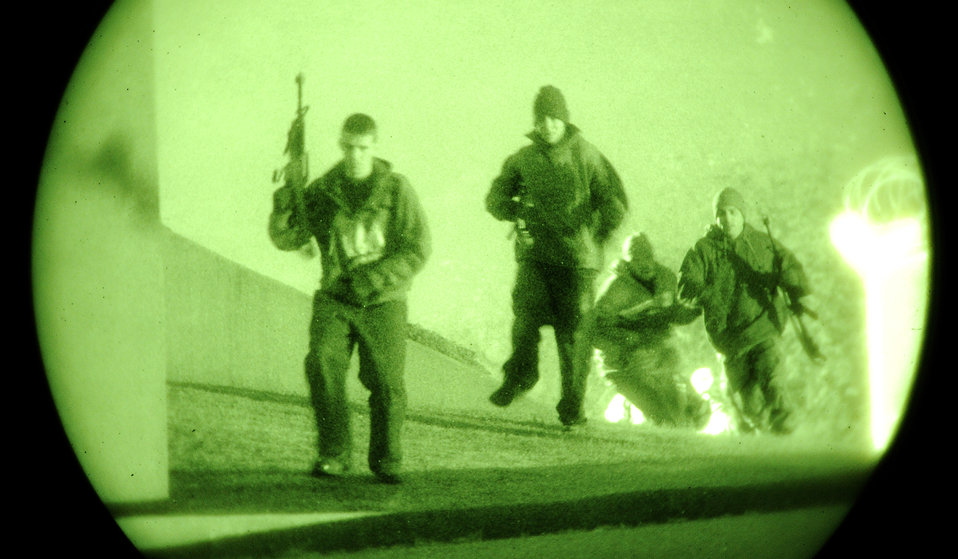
Night exercise at Osan Air Base